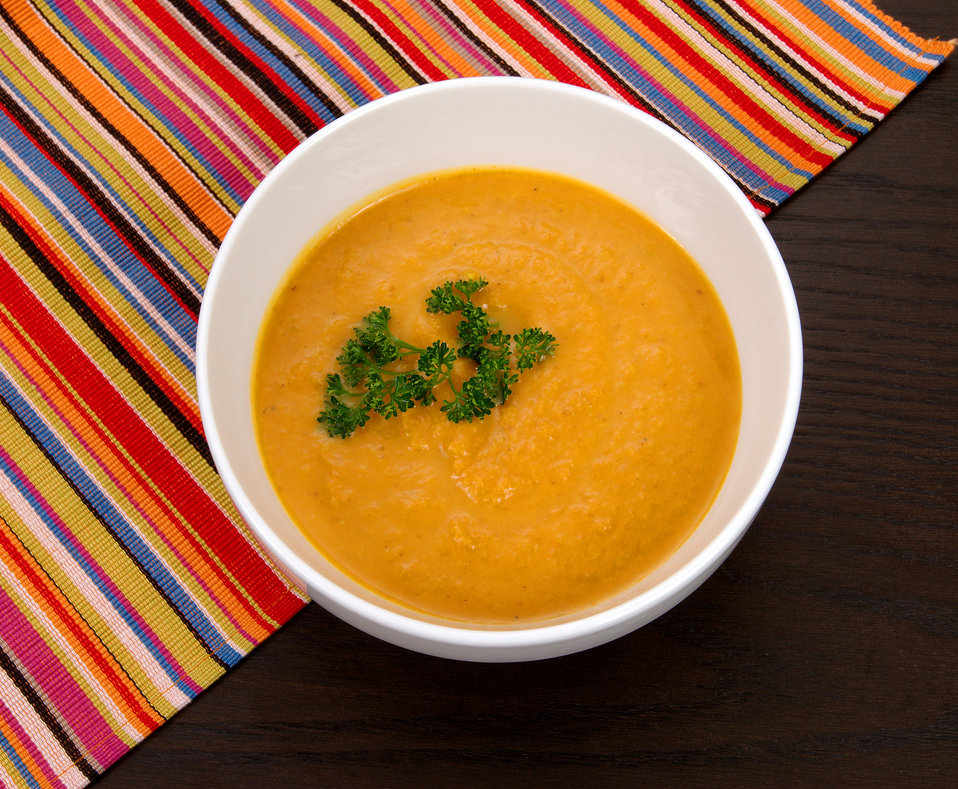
This bowl of Pumpkin Curry Soup, makes for a great choice as a side dish. It's very high in fiber with 6 grams per cup, a very good source of beta carotene, vitamins A and C, and the mineral potassium. This is a nutrient-rich food, with very little sodium (salt), and naturally-occurring sugars. The recipe may be downloaded through the link below.